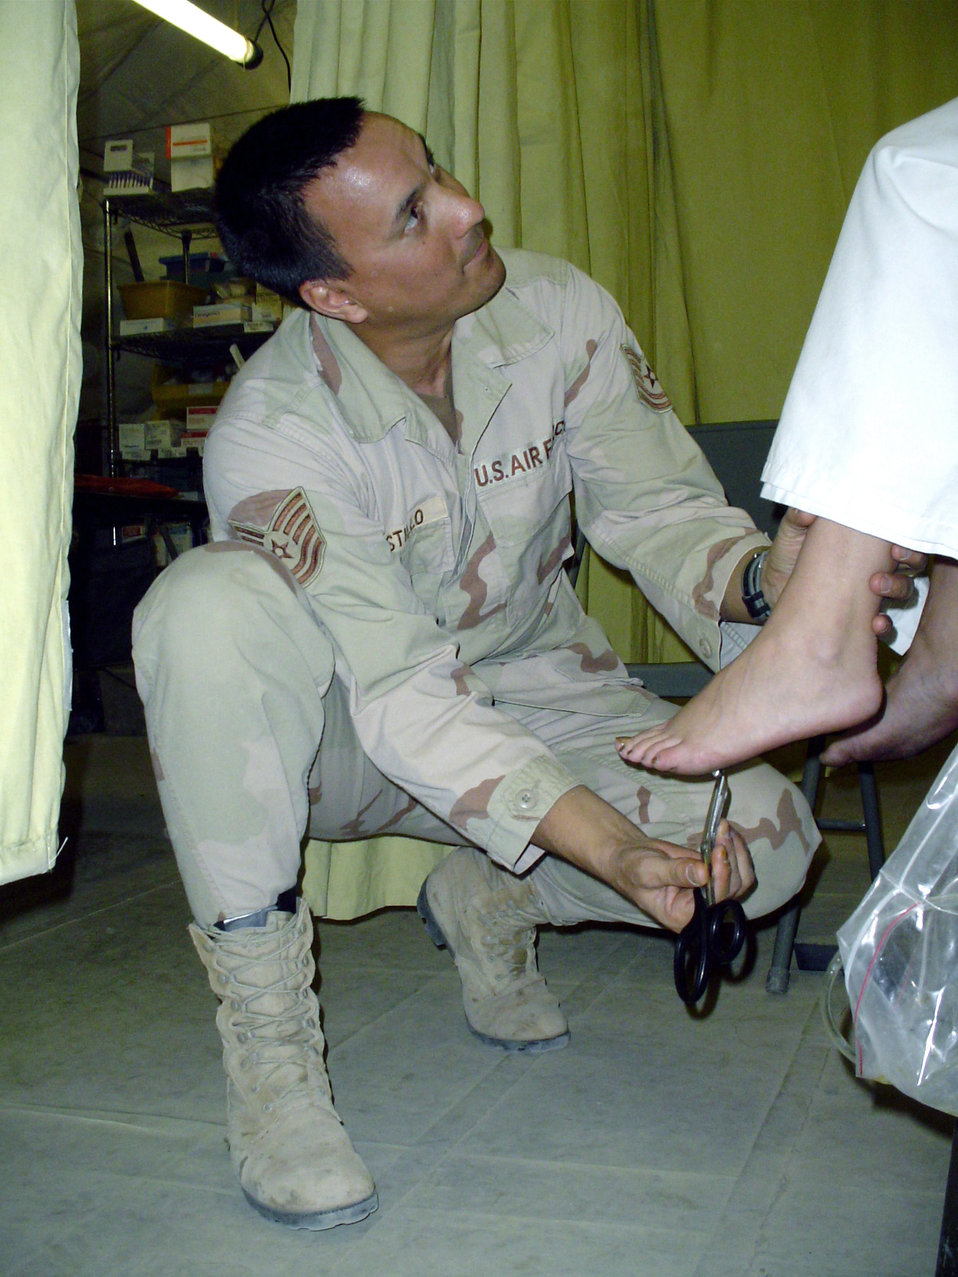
Multifaceted care

CAMP SATHER, Iraq -- Tech. Sgt. Sterling Castillo checks reflexes on a patient having an allergic reaction to a possible insect bite. Sergeant Castillo is an independent duty medical technician with the 447th Expeditionary Medical Squadron here. Airmen in the squadron provide care ranging from sick-call service to emergency surgery.